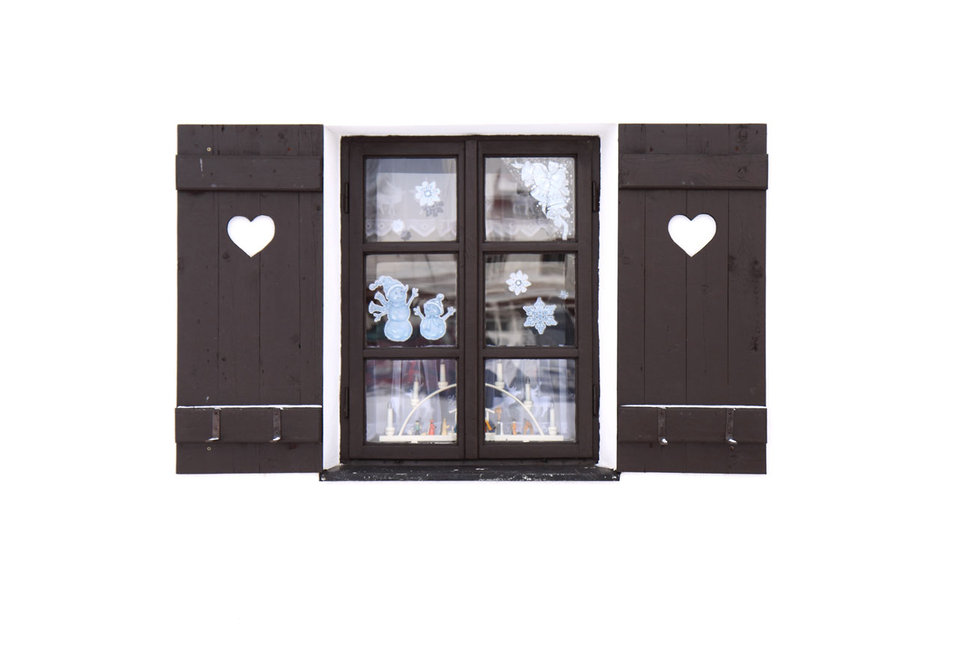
Wooden window

Open wooden window on white background.